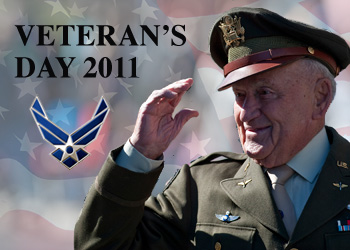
Veteran's Day 2011